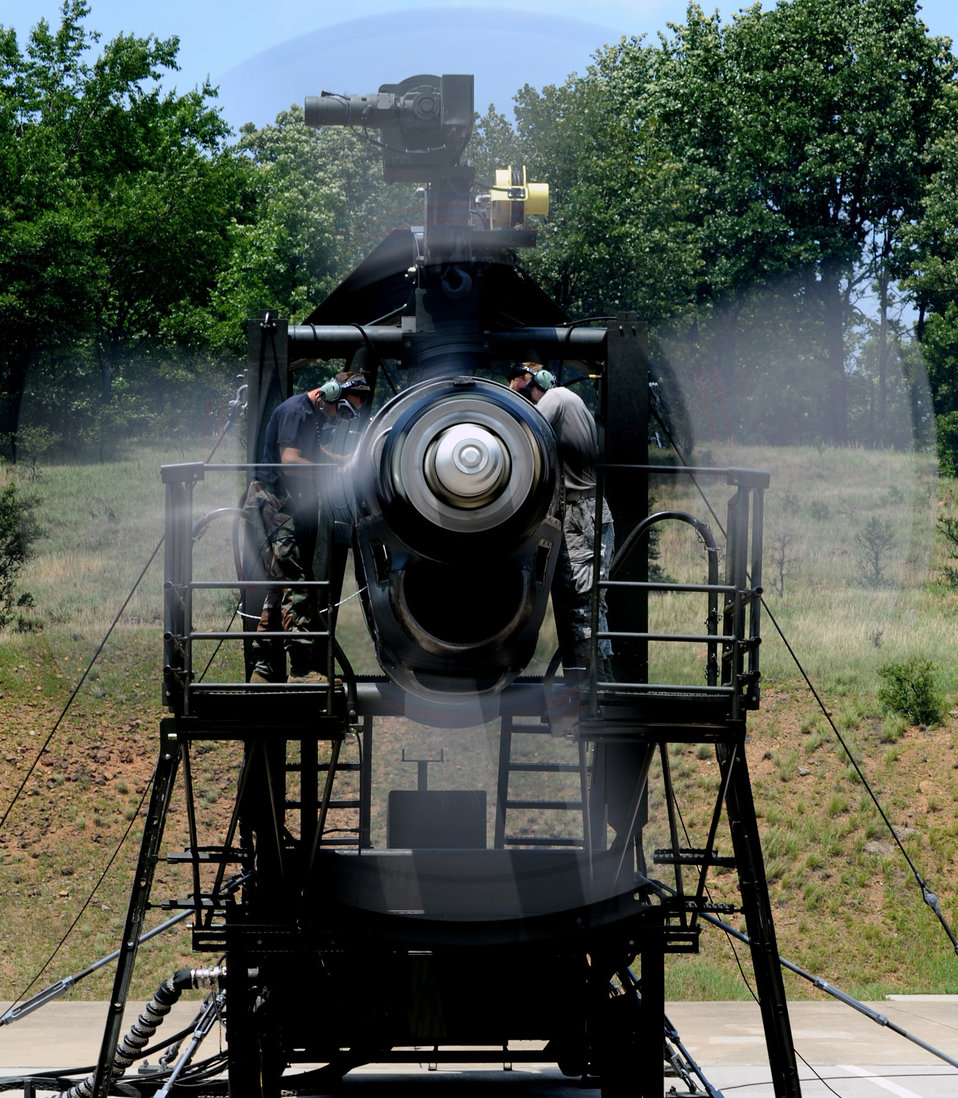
C-130 engine maintenance

Staff Sgt. Daniel Hermann (left) and Tech. Sgt. Jeremy Leuch inspect a C-130 Hercules engine for fluid leaks during a performance check May 25, 2011, at Little Rock Air Force Base, Ark. A C-130 engine performance check is a two-day process before the engine is sent back to the engine shop for final inspection. Sergeant Hermann is an aerospace propulsion craftsman assigned to the 19th Component Maintenance Squadron. Sergeant Leuch is the NCO in charge of the 19th Component Maintenance Squadron test cell.